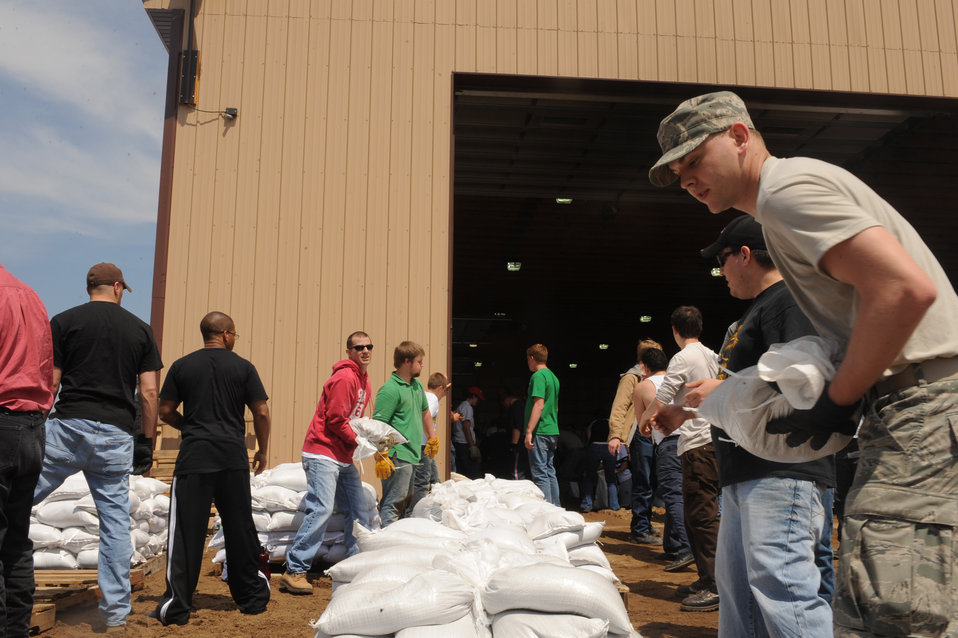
Minot Airmen help neighbors as flood water rises

Airmen and local citizens work together to prepare sandbags for the incoming floods June 1, 2011, in Minot, N.D. In preparation for possible flooding, the city of Minot, with assistance from Airmen from Minot Air Force Base, North Dakota National Guard as well as many other organizations, are setting up secondary dikes along the river. The Souris River threatens to break the levies already in place, thousands of Minot citizens, including military members, their families and DOD civilians, have been forced to evacuate the area.